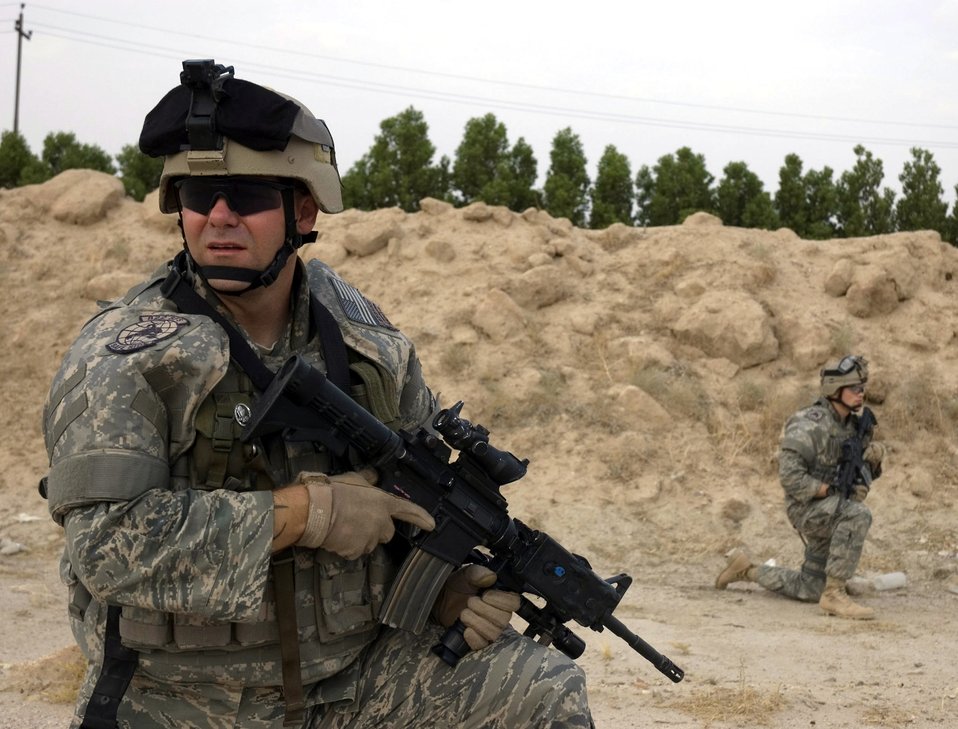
Airmen help keep Iraqi supply routes open

Tech. Sgt. Donnie Gallagher and a fellow Airman take a knee while they scan the area for improvised explosive devices in early August in southern Iraq. Sergeant Gallagher is an 887th Expeditionary Security Forces Squadron Scorpion 1-6 squad leader.